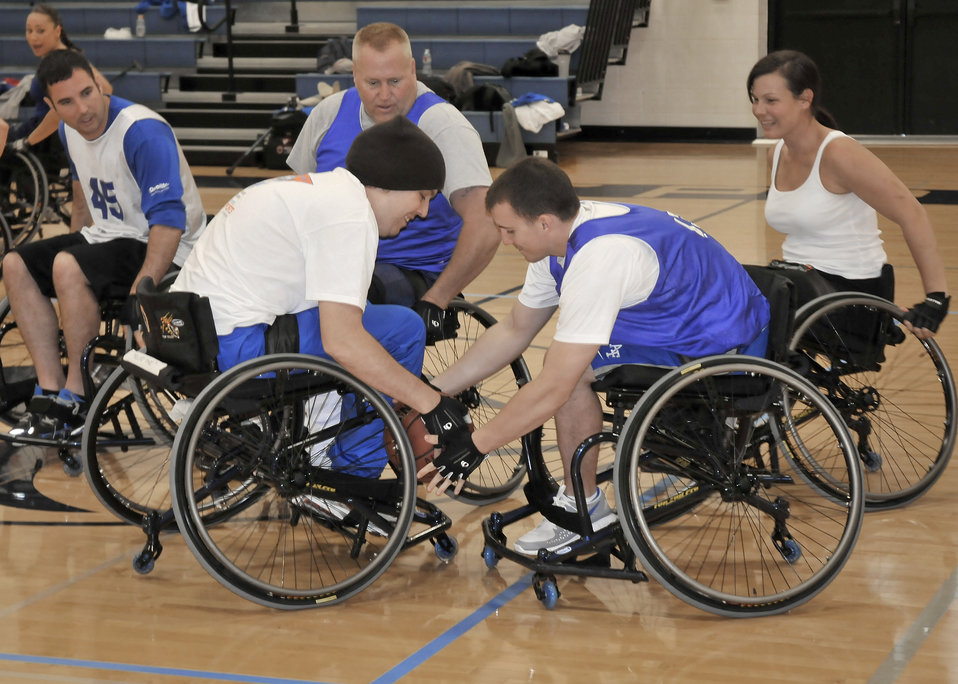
Wounded Warrior Basketball Games

Retired Staff Sgt. Greg Miller wrestles the ball from Ohio University Air Force ROTC Cadet Matt Pirrello during the 2011 Warrior Games training camp May 14, 2011, at the Air Force Academy Prep School in Colorado Springs, Colo. Teammates Staff Sgt. Chris D'Angelo (left), retired Staff Sgt. Claude Owens (center), and retired Staff Sgt. Stacy Pearsall (right), position themselves to receive the ball once possession is gained.